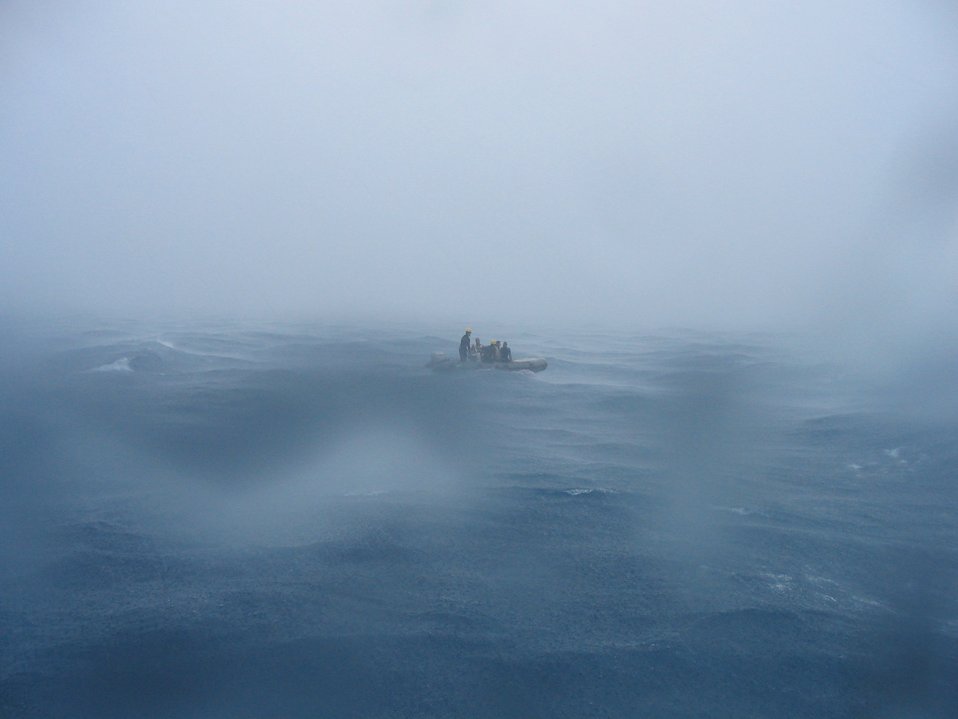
Inflatable boat waiting for retrieval by contract vessel CASITAS on a squally day.